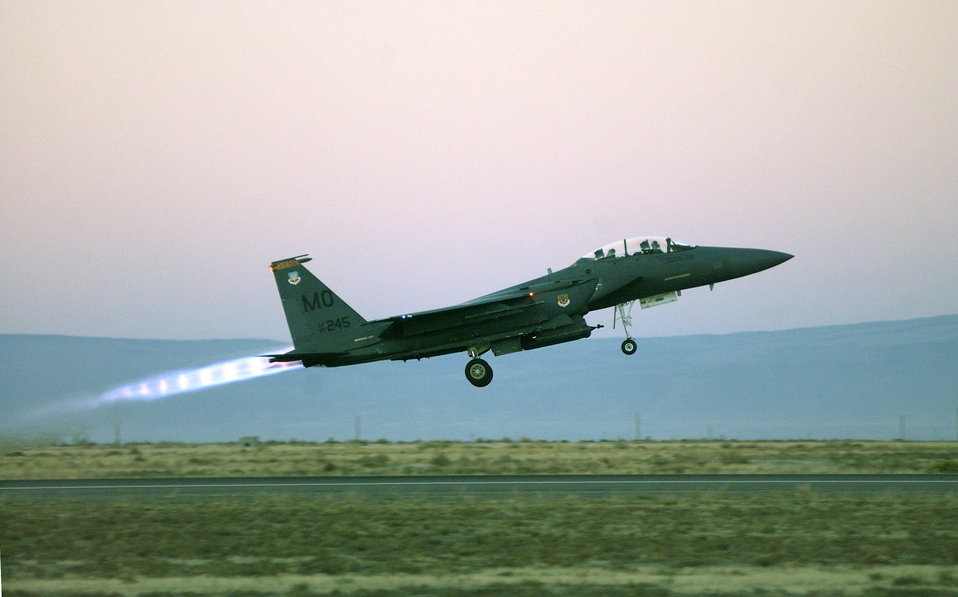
Readiness Eagle

MOUNTAIN HOME AIR FORCE BASE, Idaho -- An F-15E Strike Eagle from the 391st Fighter Squadron here, takes off for an early morning sortie during an Operational Readiness Inspection on Oct. 17. The 366th FW was evaluated on how well it responded to crisis, employed forces, provided mission support and survived and operated in hostile environments. ORIs are conducted to evaluate the ability of units with a wartime or contingency mission to conduct assigned operational missions.